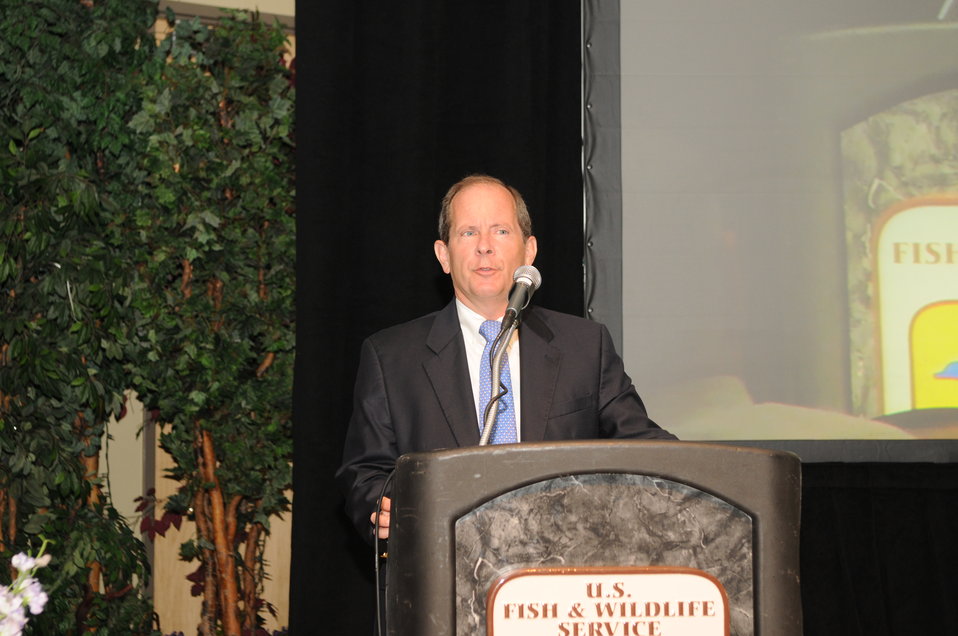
Opening Remarks

The U.S. Fish & Wildlife Service sponsored the 2012 Federal Duck Stamp Art Contest September 28 and 29 in Ogden, Utah, at Weber State University. A panel of five judges was responsible for choosing the art work used to design the 2013-2014 Migratory Bird Hunting and Conservation Stamp.